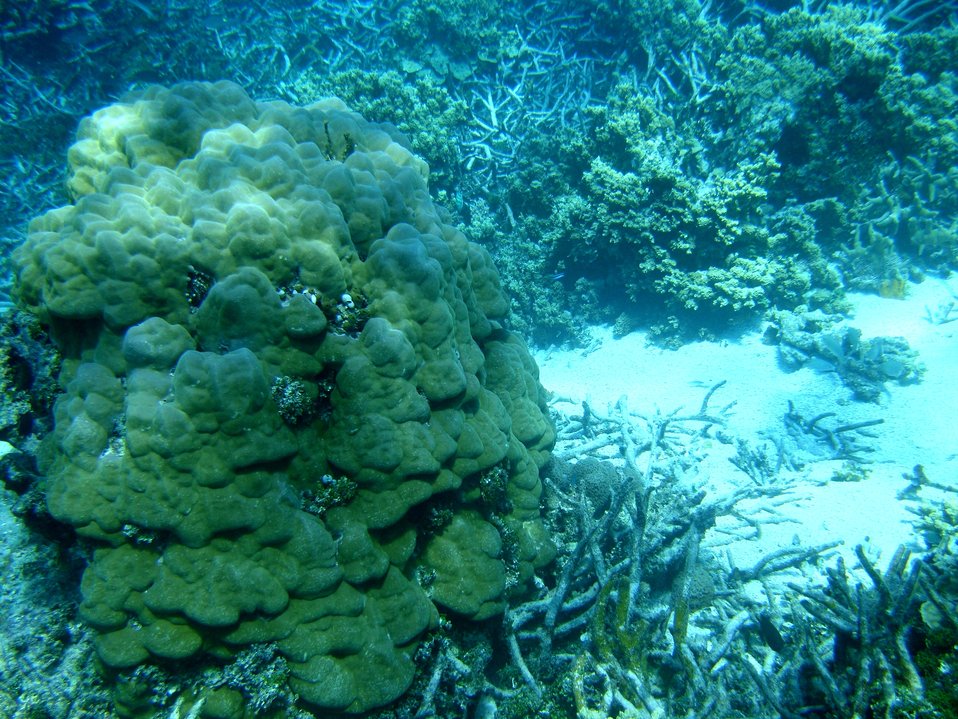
Poritidae coral Porites sp. left side of image